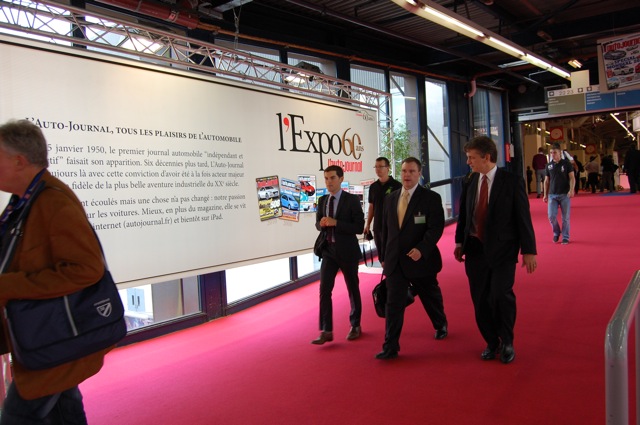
David Sandalow at the Paris Auto Show